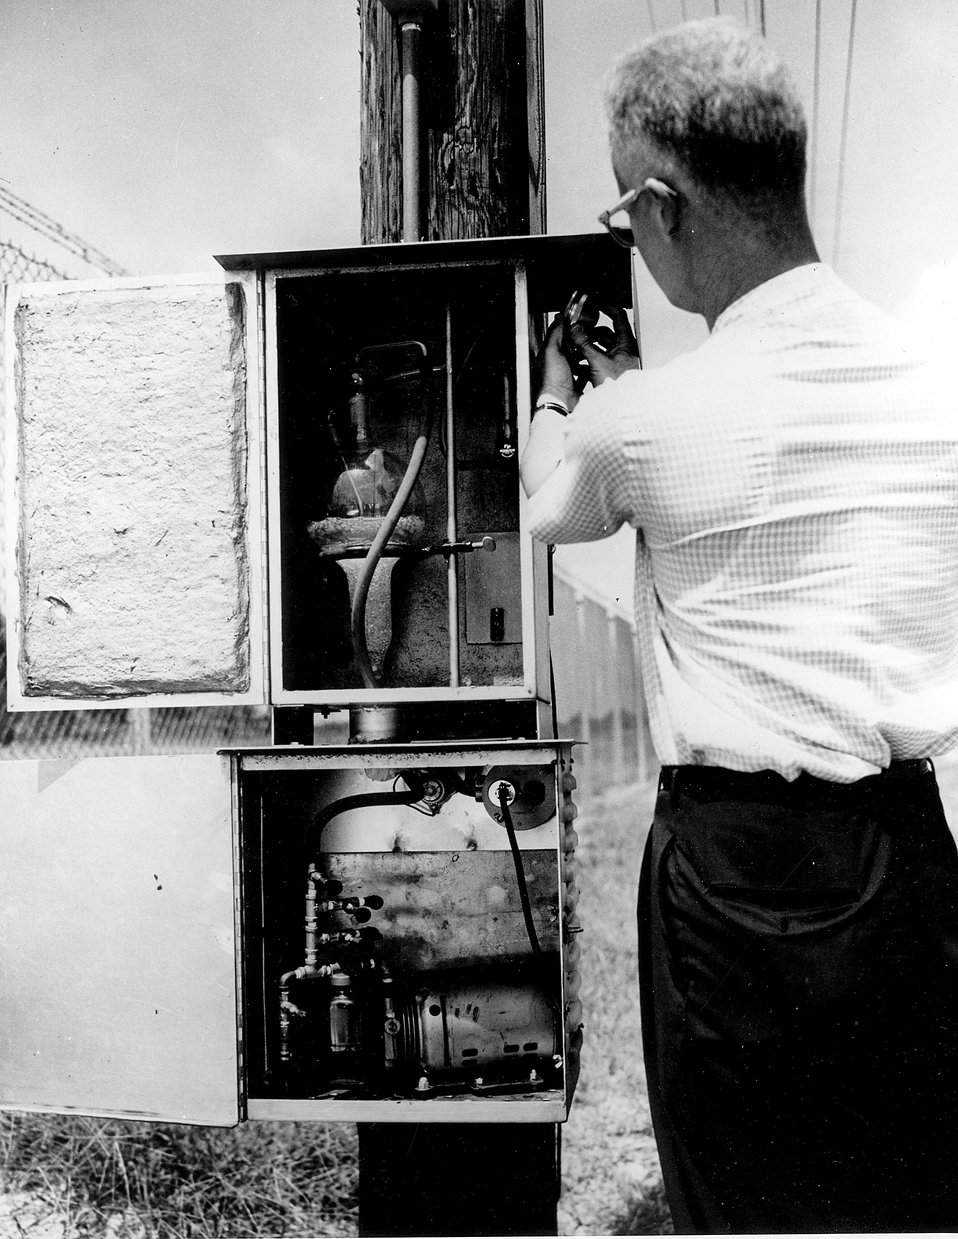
A continuous outdoor air sampler simultaneously collecting particulate and gaseous contaminants from ambient air provides the means of measuring minute amounts of air contaminants. Circa 1967.